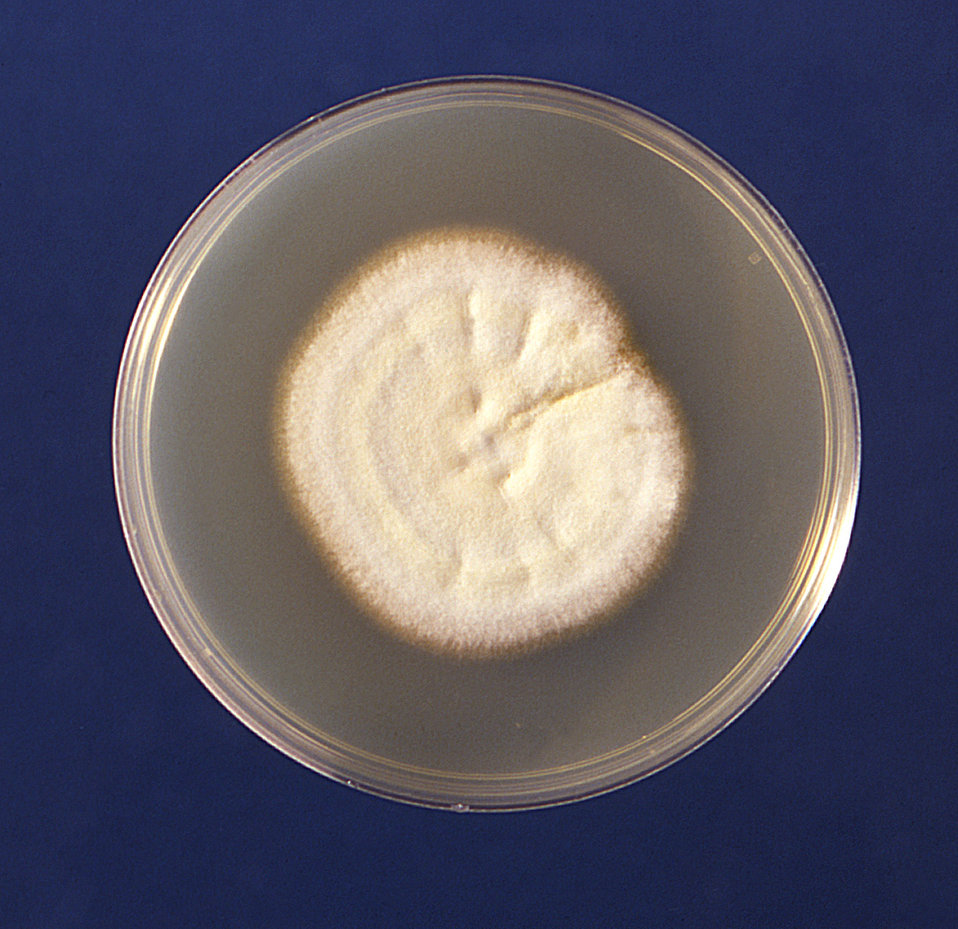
This image depicts the colonial growth on a plate culture of the fungus Trichophyton mariatii.